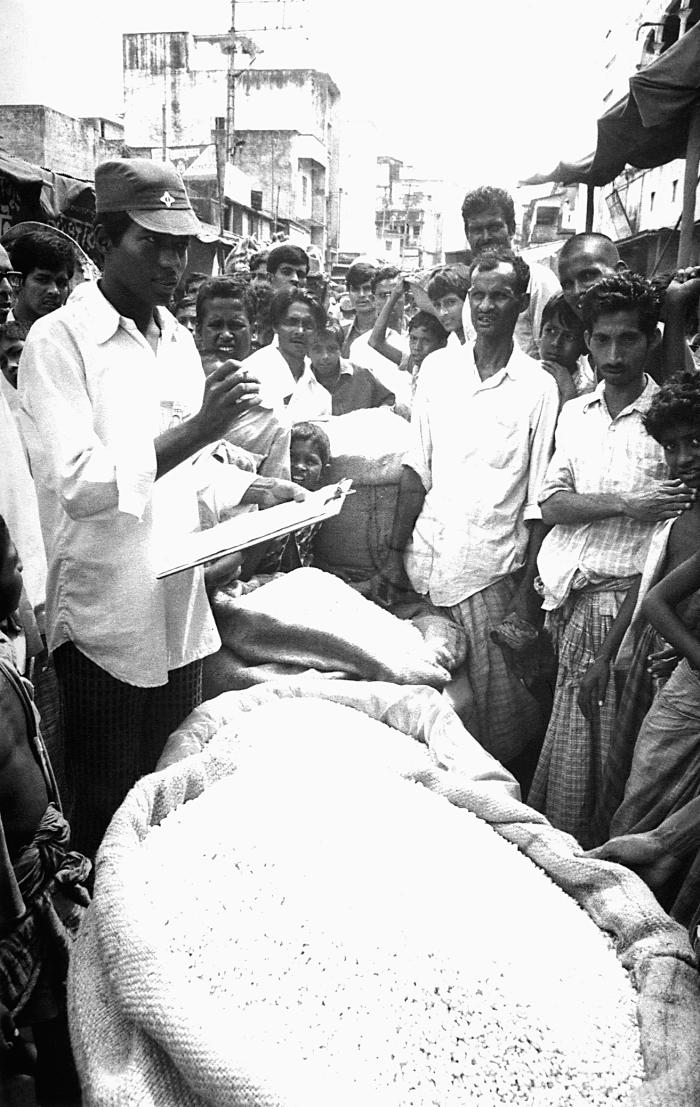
This 1975 photograph depicted a community smallpox eradication team volunteer as he was questioning members of a market crowd about the possible presence of smallpox cases in their community. If, indeed, a case was reported, from no matter the source, it was investigated fully, and if confirmed as a smallpox case, a reward was paid to the informant, no matter the age, and it was subsequently entered into the 'Containment Book'. The Containment Book was a ledger, which recorded all of the names of anyone living in, or within one half of a mile from a smallpox case, and subsequently all those listed were vaccinated against smallpox. Those vaccinated were followed until a 'successful' vaccination was observed. Periodic surveys showed that by the end of the program, 80% of the public knew about the cash award presented to those who had informed the public health authorities of a confirmed smallpox case.